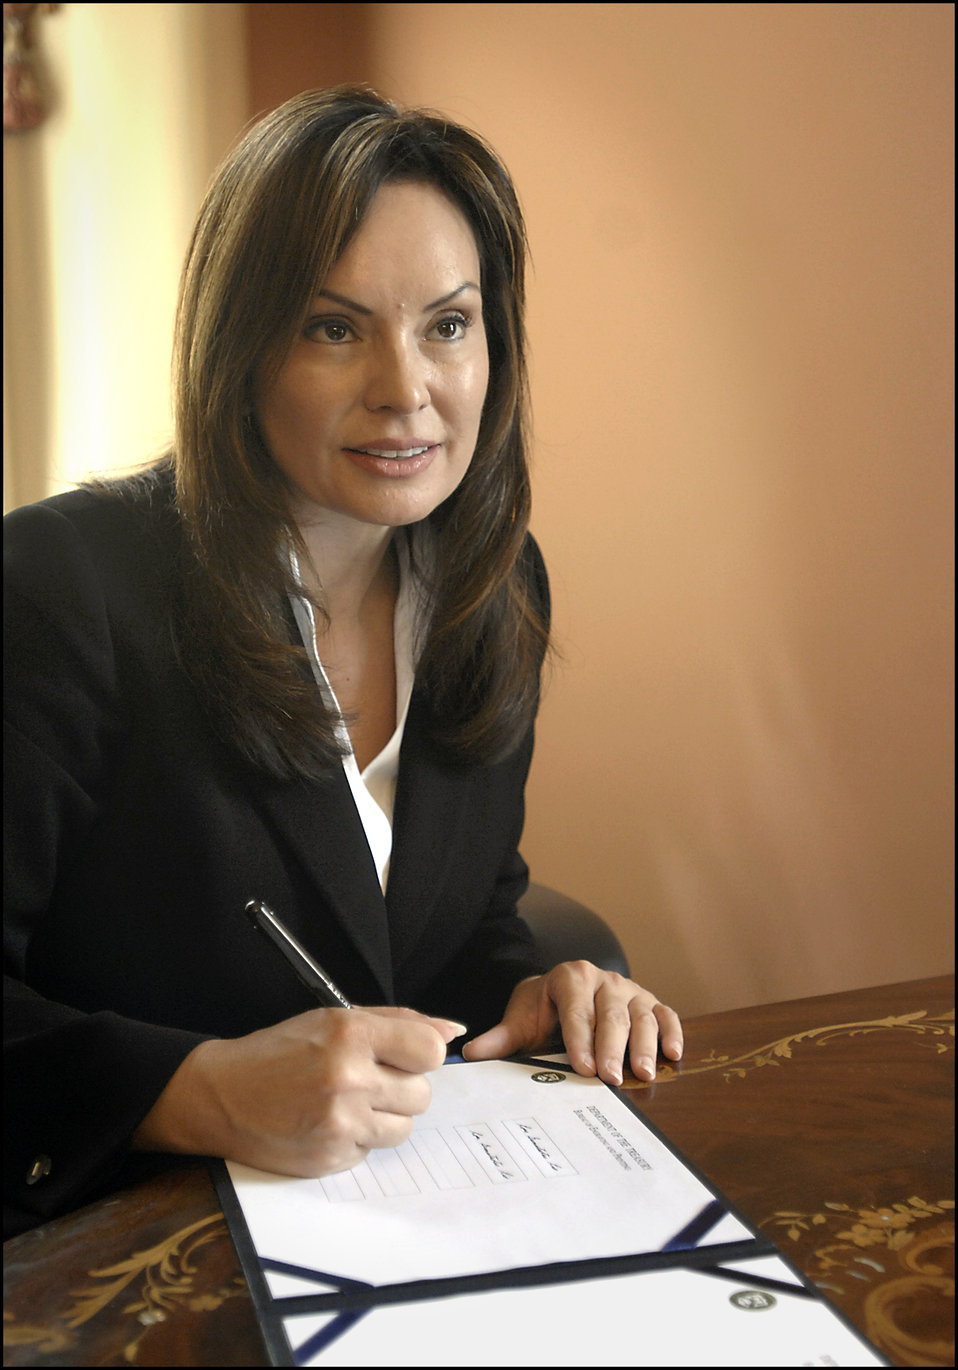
Rios signing

Treasurer of the United States Rosie Rios’s signature will be featured on all new bills printed by the Bureau of Engraving and Printing.